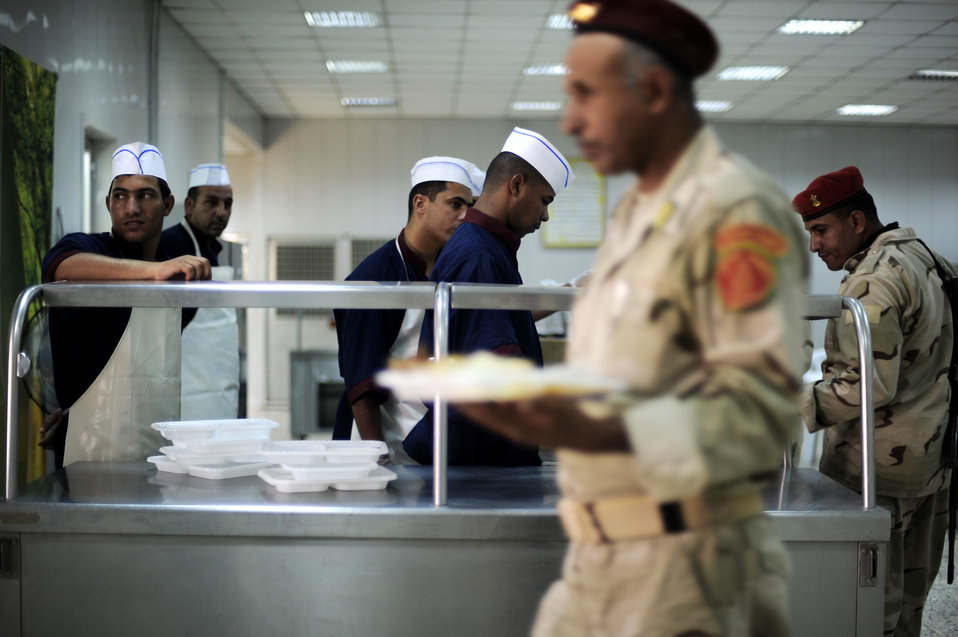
Airmen step back as Iraqis take control of mission support

Iraqi soldiers eat lunch at their dining facility July 12 at Camp Taji, Iraq. This dining facility is run exclusively by the Iraqi army with some assistance from an American Airman assigned to the Logistics Military Adviser Team.